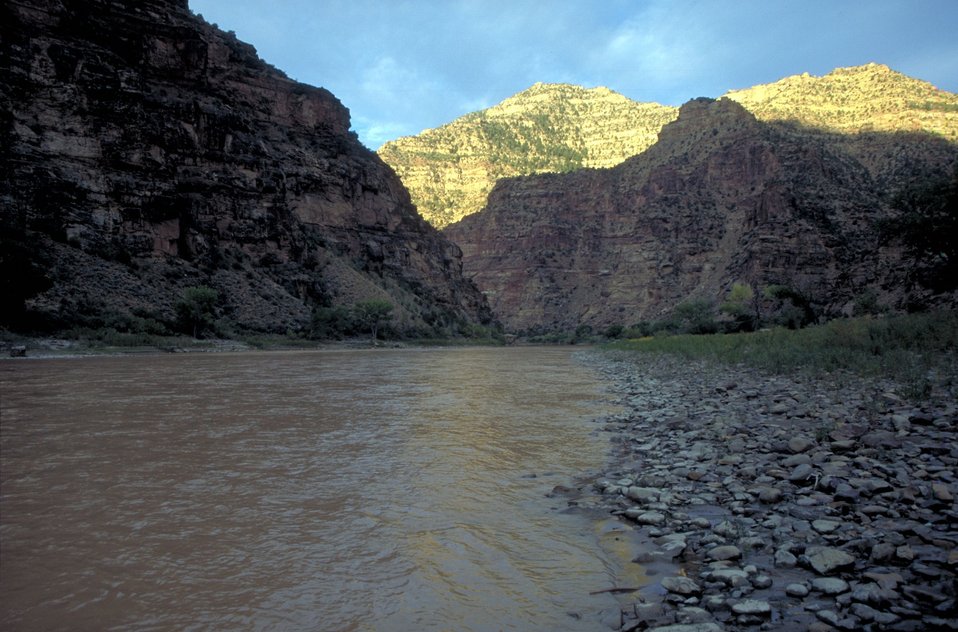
Desolation/Gray Canyons near Price, Utah.